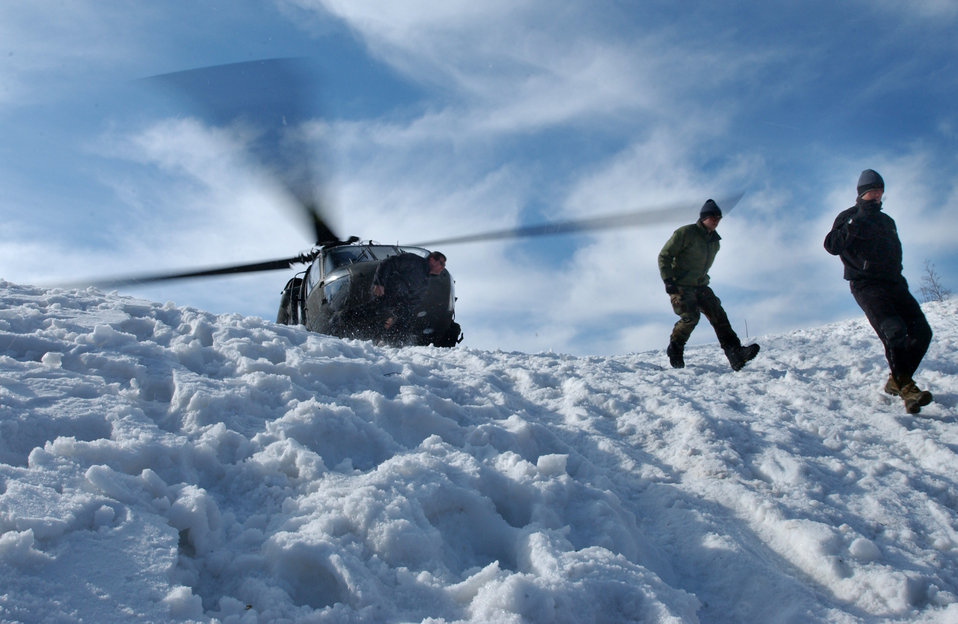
Crash site

ALBANIAN MOUNTAINS -- Airmen with 321st Special Tactics Squadron depart a landing area after safely marshalling in a U.S.Army UH-60 Black Hawk to a landing zone here recently. The 321st STS was the first Air Force unit on scene to secure the crash site where a special operations MC-130H Combat Talon II crashed March 31. The 321st STS Airmen are stationed at Royal Air Force Mildenhall, England.